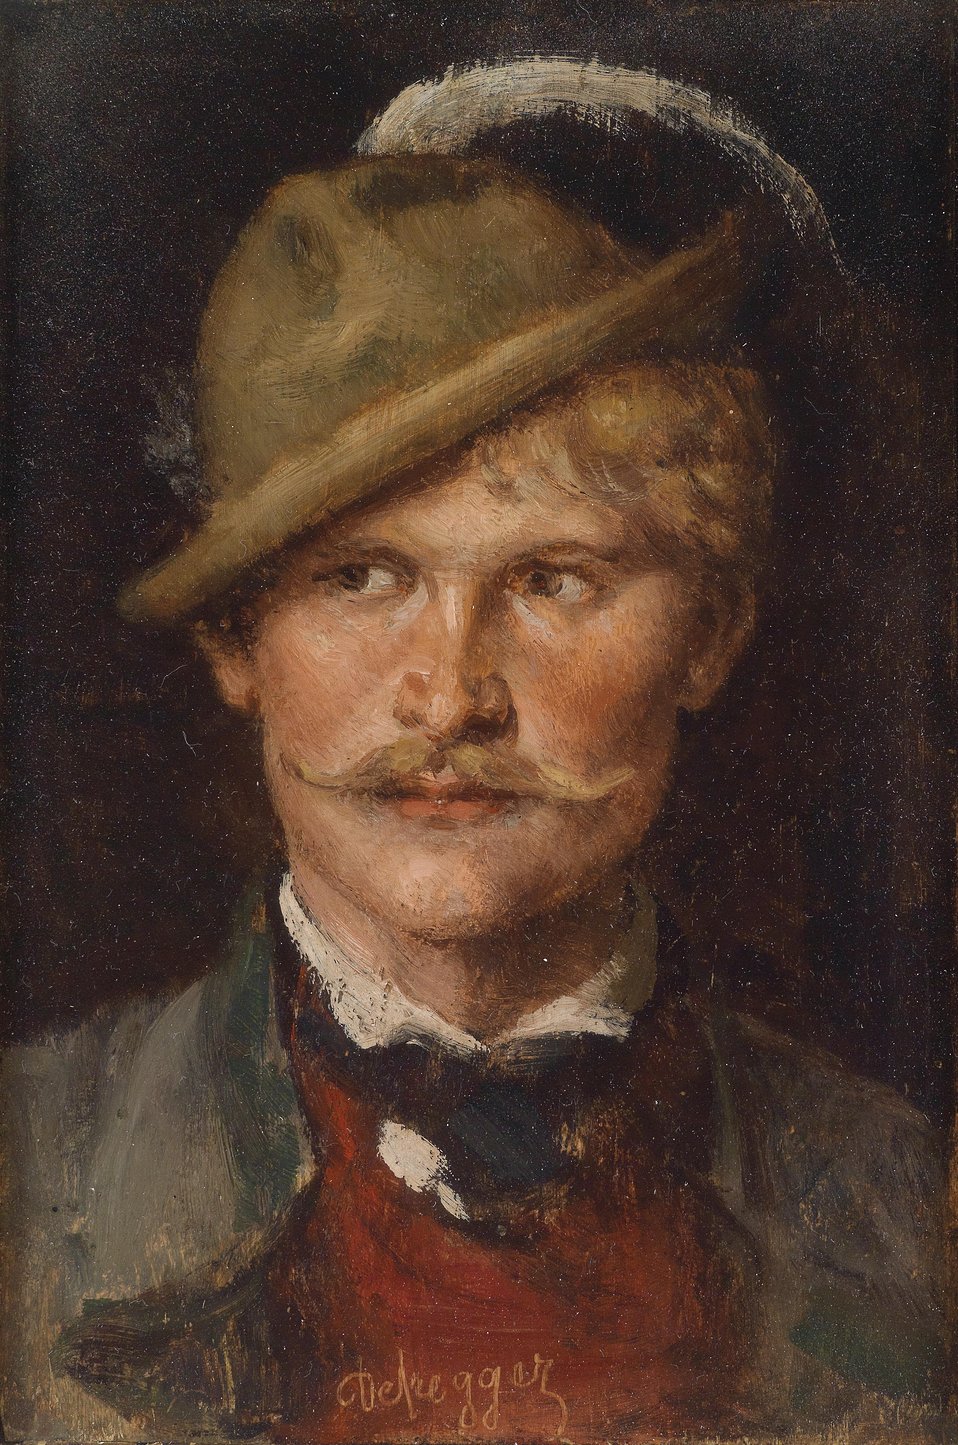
Franz von Defregger Bauernbursch mit Hut